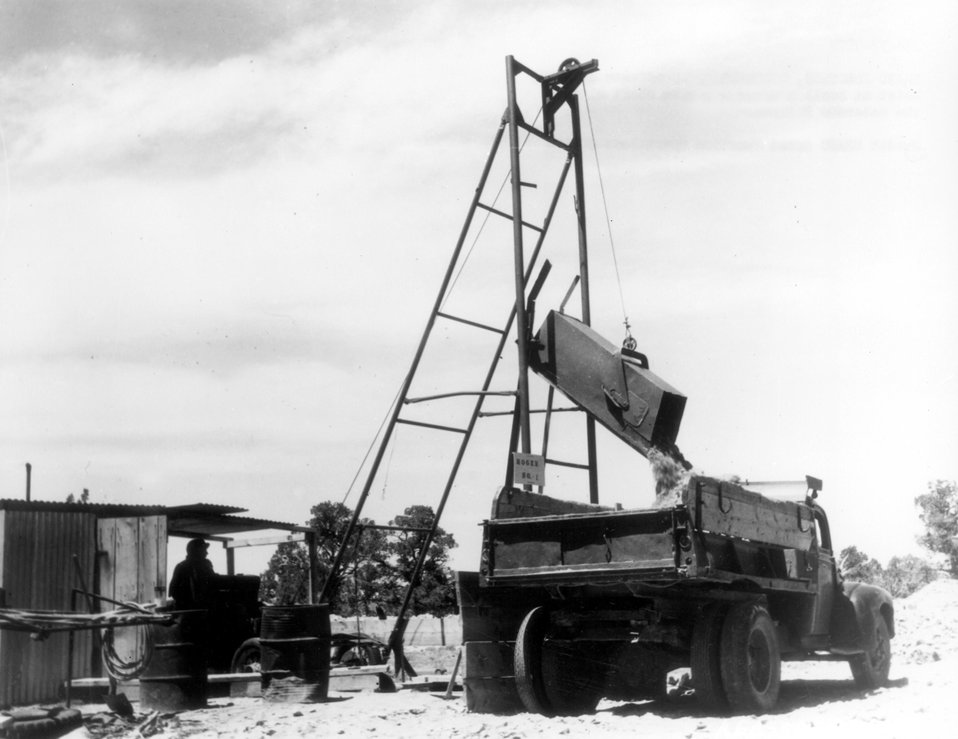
Head framed and skip hoist at small uranium inclined shaft mine on the Colorado Plateau. c. 1957